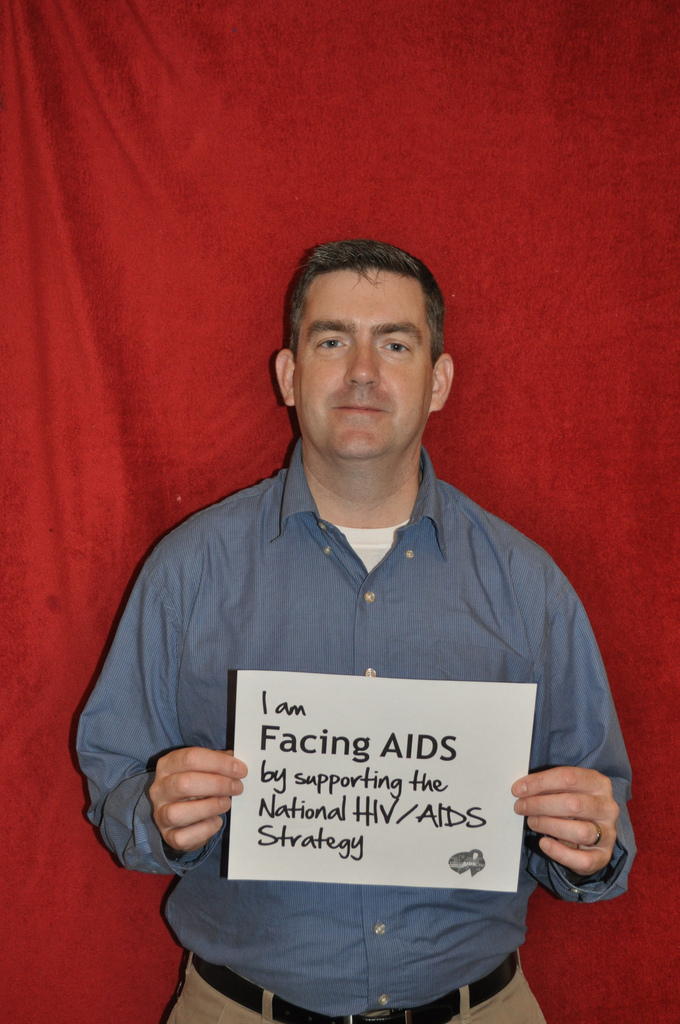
I am Facing AIDS through NHAS-10